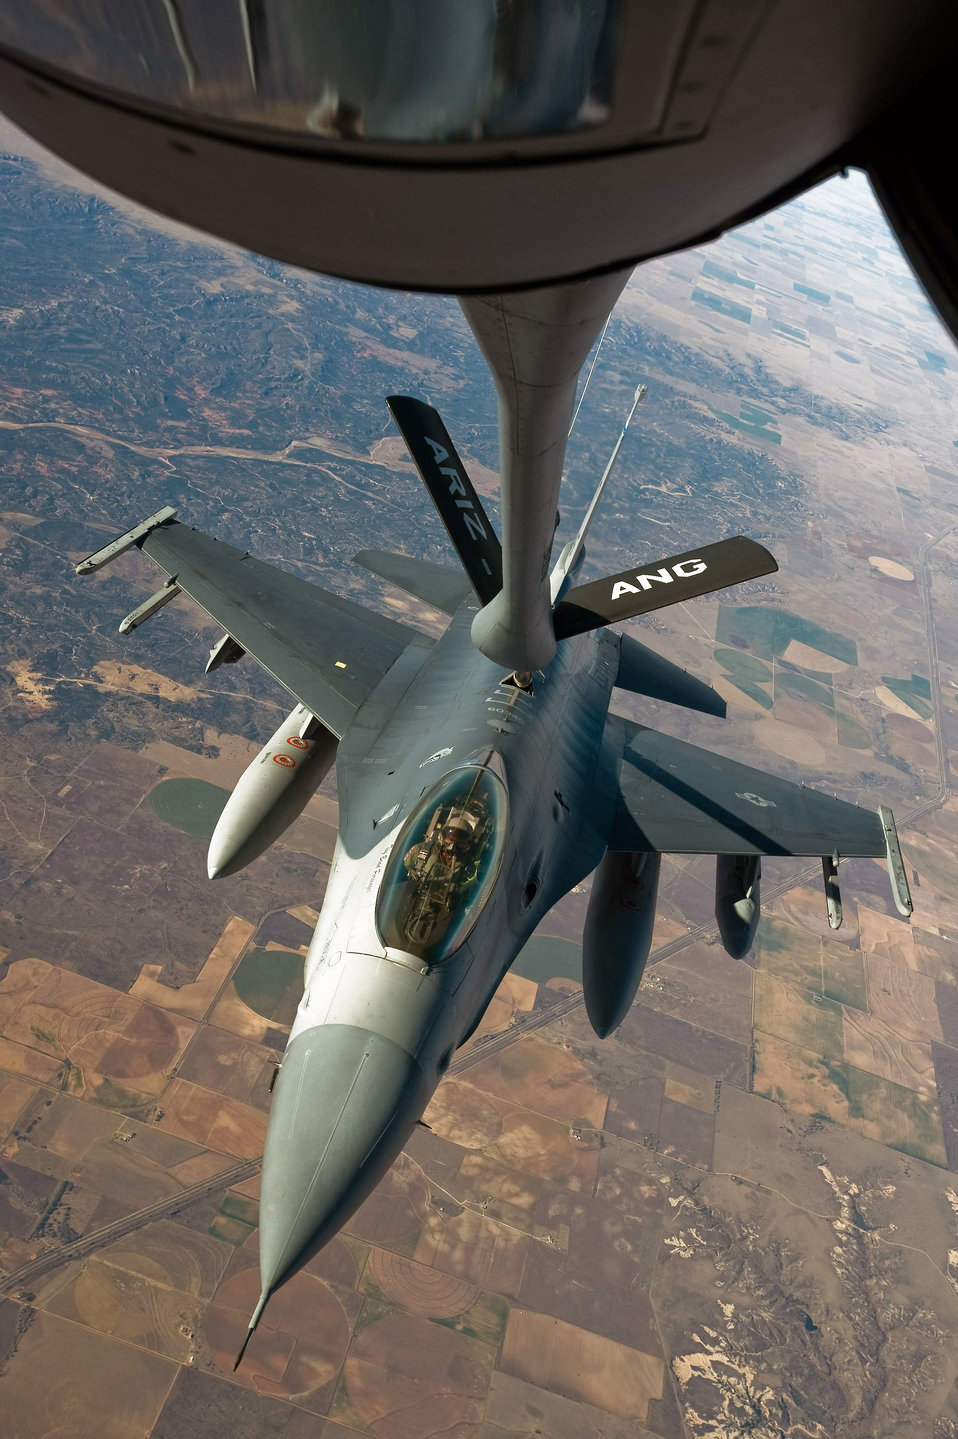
Gas and go

An F-16 Fighting Falcon receives fuel from a KC-135 Stratotanker Dec. 1 en route to Barksdale Air Force Base, La., to take part in Exercise Green Flag East. The exercise is a pre-deployment exercise for Air Combat Command flying units that perform close-air support and precision-guided munitions delivery. The F-16 is from the 120th Fighter Squadron of the Colorado Air National Guard.